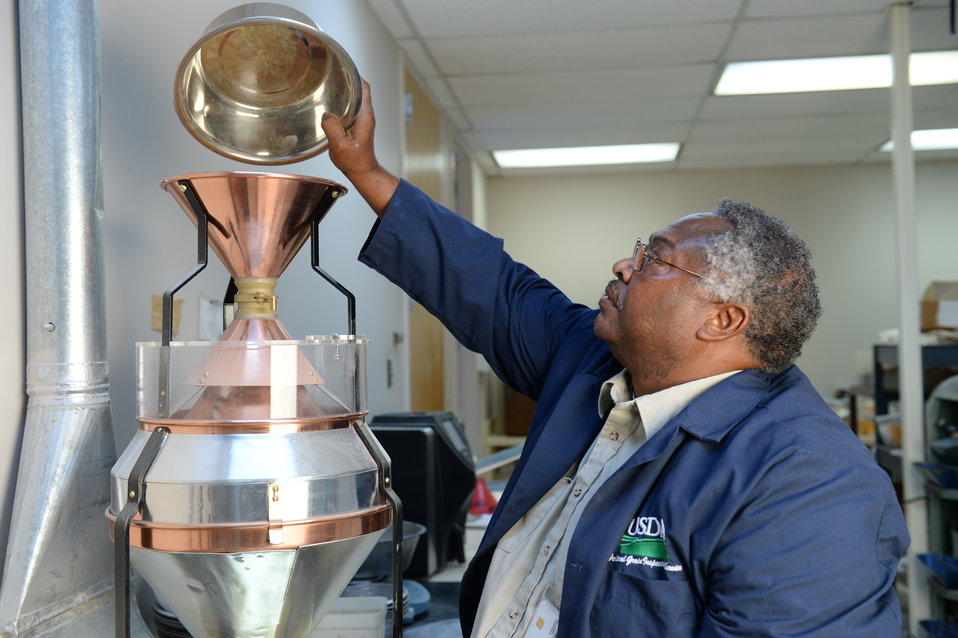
A U.S. Department of Agriculture (USDA) Grain Inspection, Packers and Stockyards Administration (GIPSA) Federal Grain Inspection Service (FGIS) scientist tests corn at the FGIS inspection laboratory in New Orleans, LA on Monday, Nov. 18, 2013.